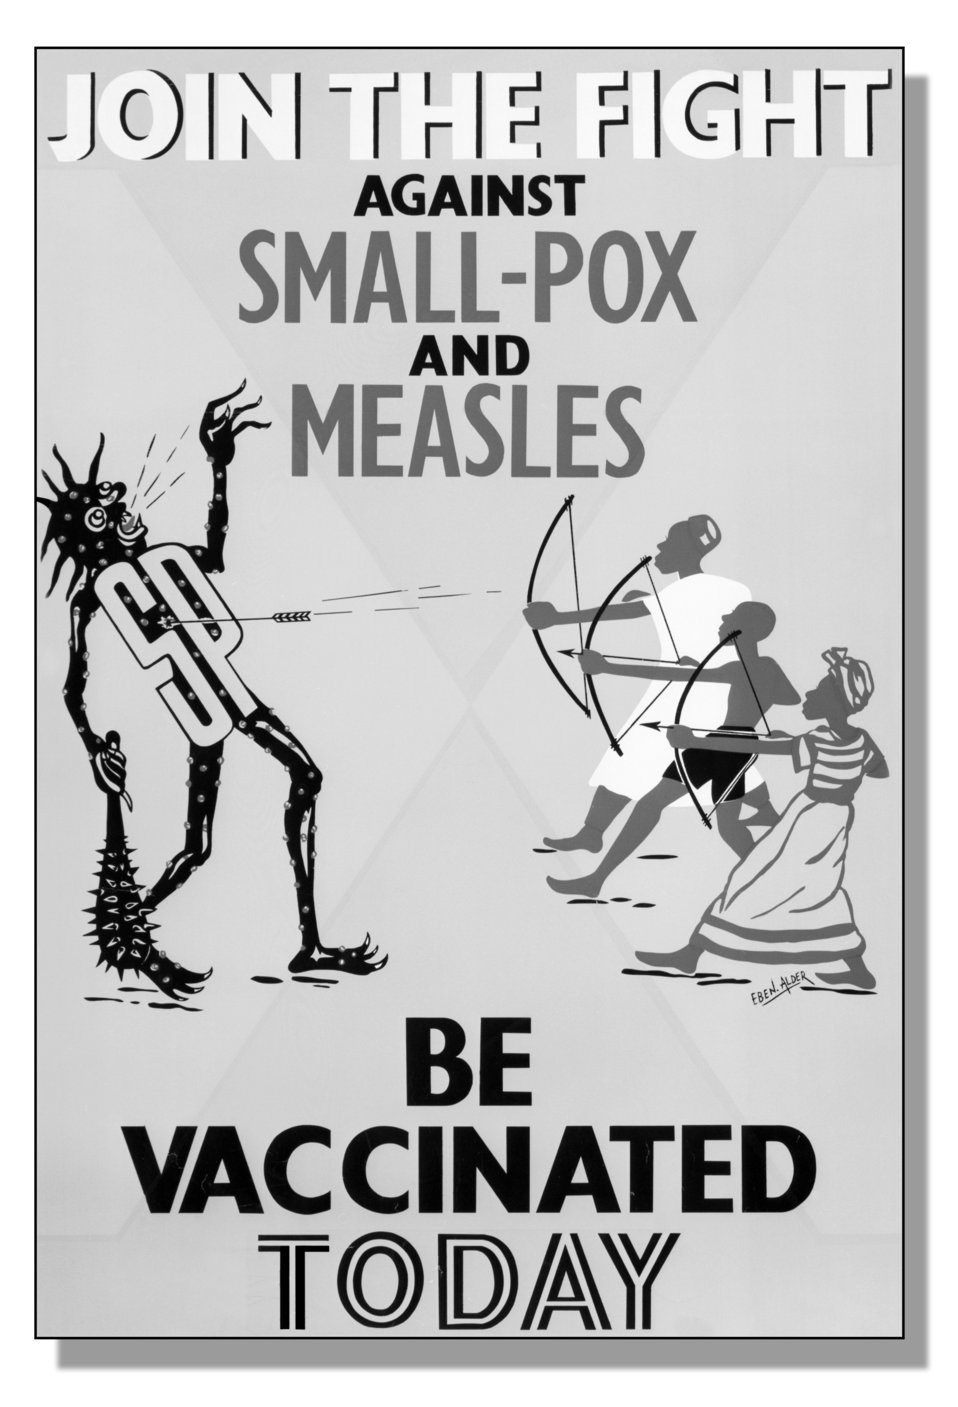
Early pre-1979 poster created to promote the importance of Smallpox and Measles vaccinations in foreign lands.